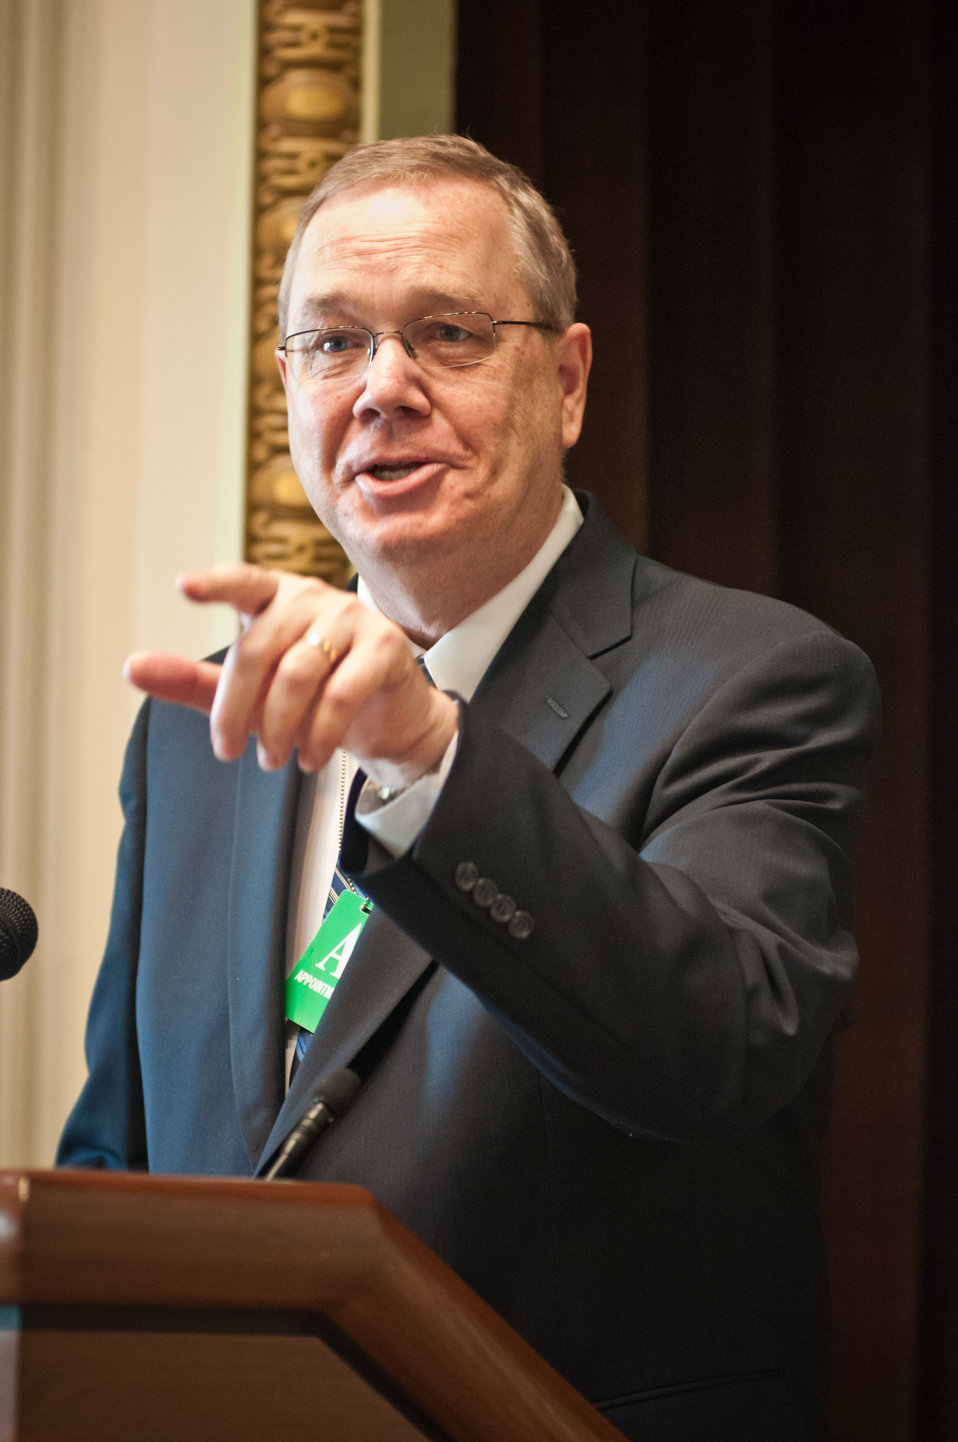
Rural Development Under Secretary Dallas Tonsager spoke about rural revitalization at the Spring National Association of Farm Broadcasters (NAFB), “Washington Watch” member retreat in Washington, D.C. This year the meeting was held in the Eisenhower Executive Office Building, Indian Treaty Room on Tuesday, April 24, 2012, featuring United Sates Department of Agriculture and Obama Administration officials. This opportunity provides an occasion to highlight efforts to rebuild and revitalize rural America, including efforts for the agricultural community. NAFB is the recognized and trusted source of agricultural and rural lifestyle information for America with approximately 200 members who broadcast via radio in nearly every state in the country.